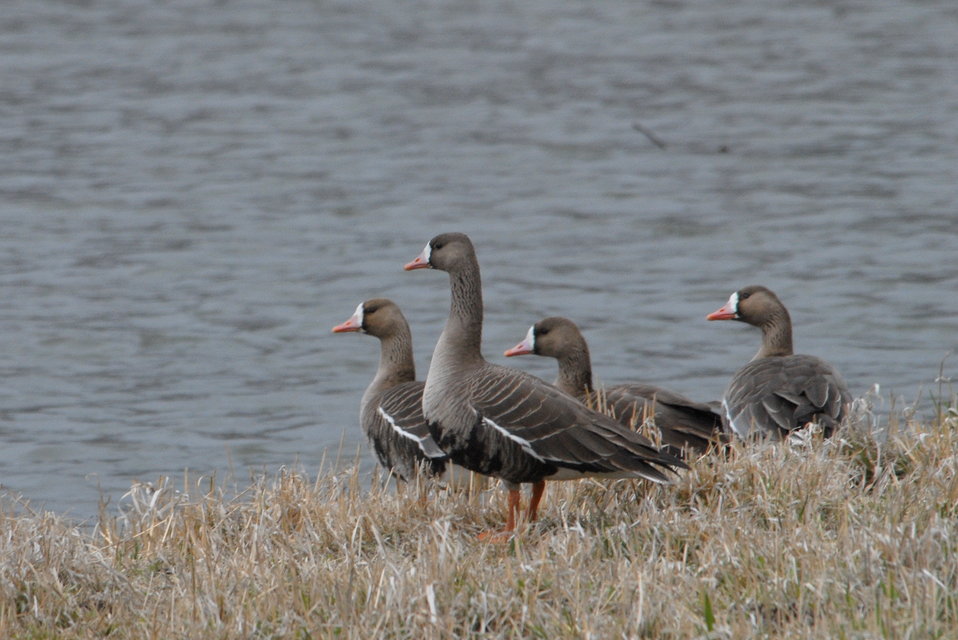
White-fronted Geese